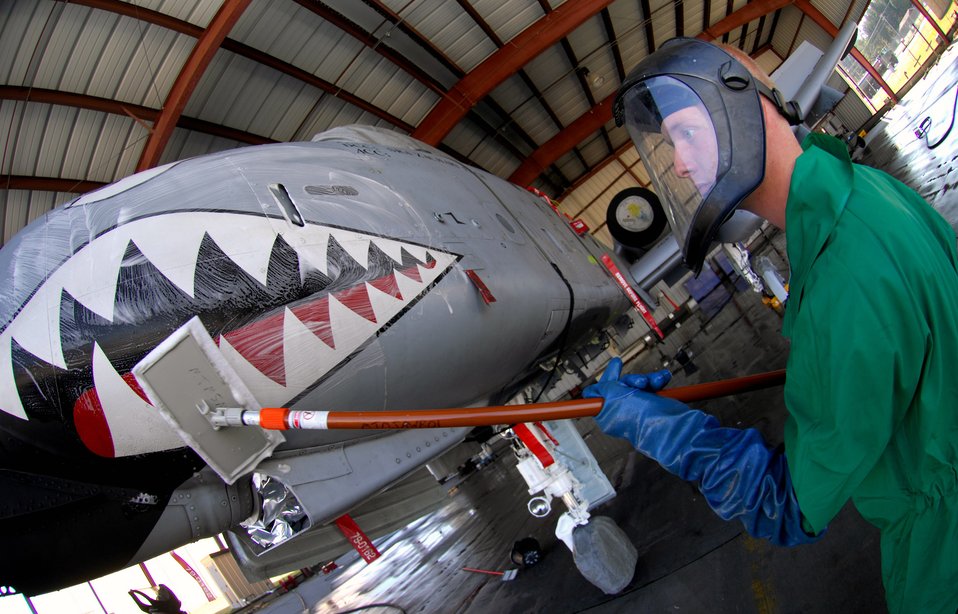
Good dental hygiene

Airman 1st Class Joshua Norris washes an A-10 Thunderbolt II Nov.19 at the corrosion control wash rack at Moody Air Force Base, Ga. Airman Norris is a 23rd Aircraft Maintenance Squadron A-10 crew chief.